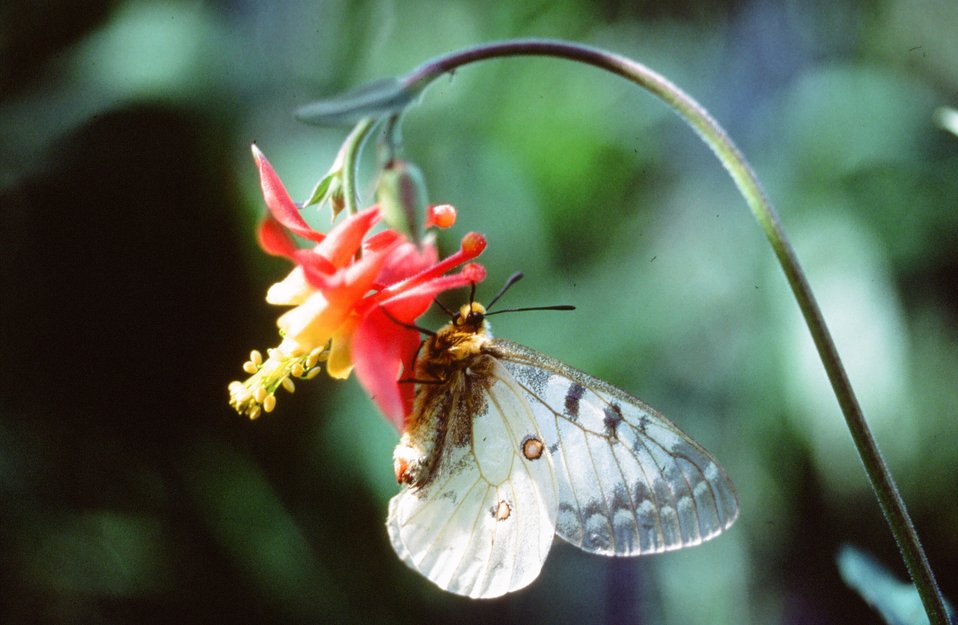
Parnassian Butterfly on Columbine Flower

The Parnassian Butterfly, which is a member of the Swallowtail Family, is seen here on a Columbine Flower.